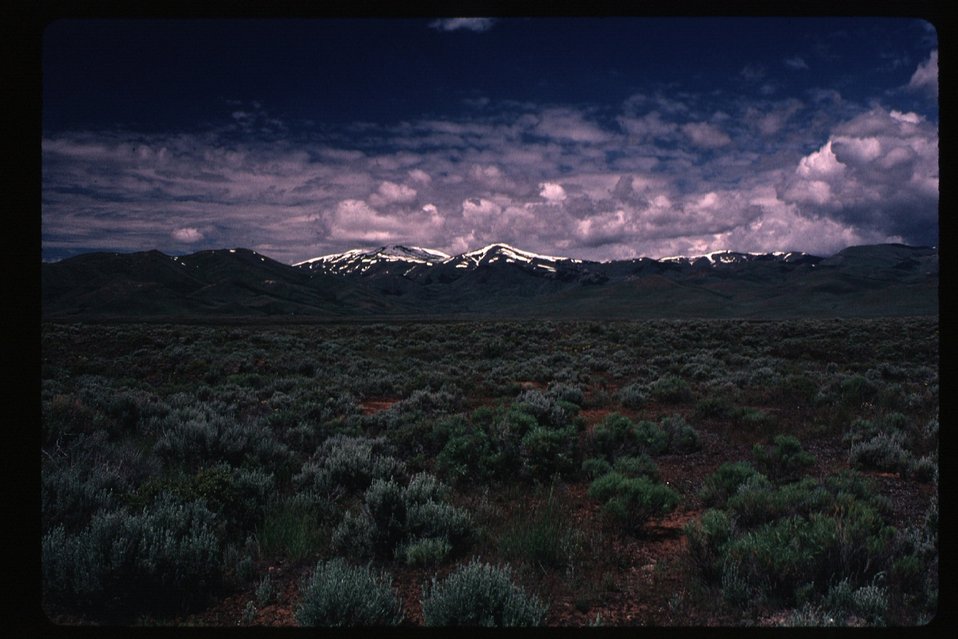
Near Craters of the Moon Scenic USRD Upper Snake River District